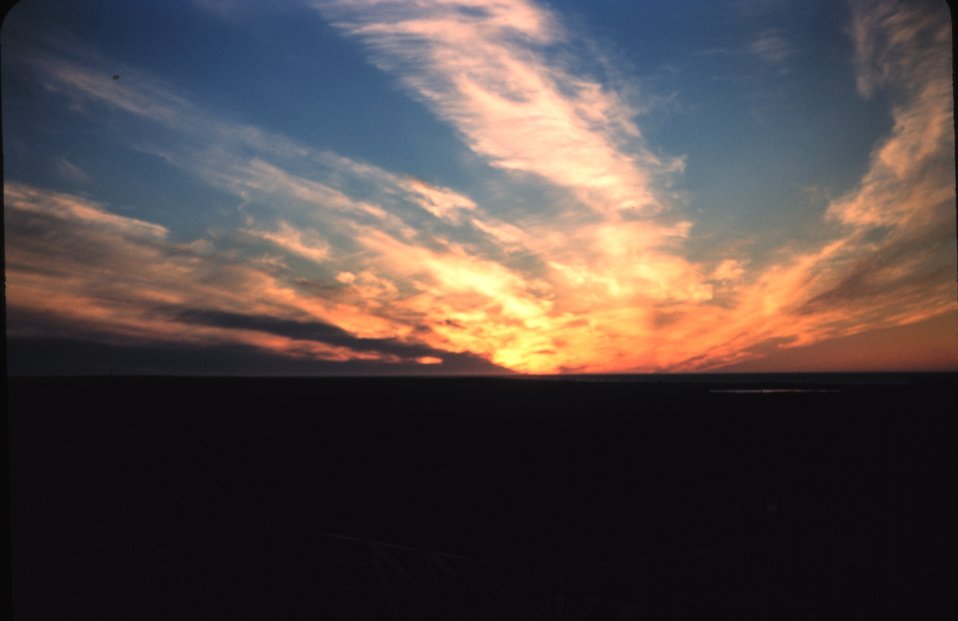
An Arctic sunset